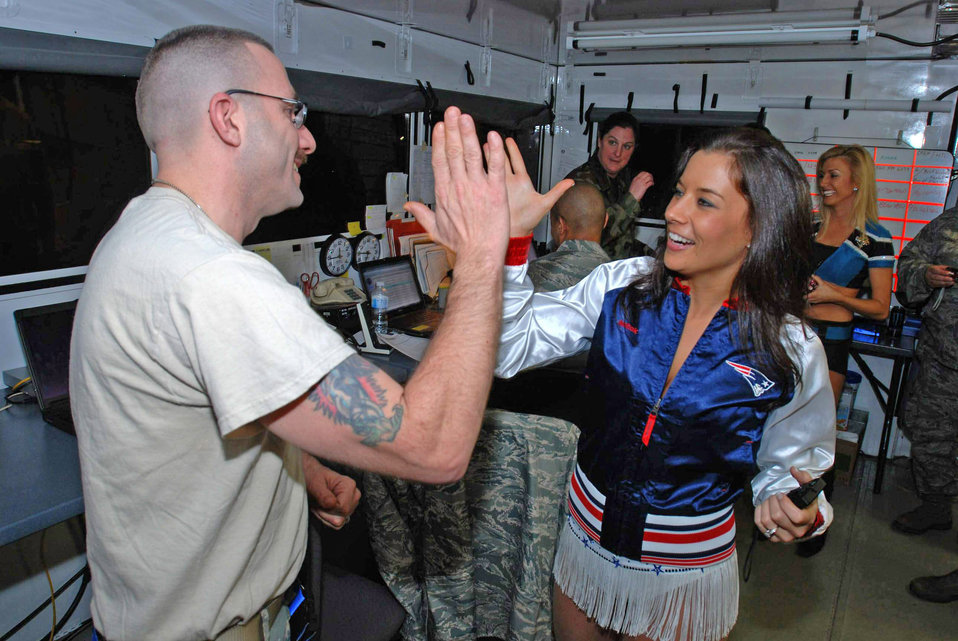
NFL Pro Bowl cheerleaders boost morale for Operation Unified Response workers

New England Patriots cheerleader Julie Warner greets Tech. Sgt. Dana DuPuis after discovering he's a Patriots fan Jan. 27, 2010, at Homestead Air Reserve Base, Fla. National Football League cheerleaders and mascots participating in the Pro Bowl visited Airmen, civilians and earthquake victims at Homestead ARB offering them a respite from the long hours of ongoing relief efforts. Sergeant DuPuis is assigned to from Westover ARB, Mass.